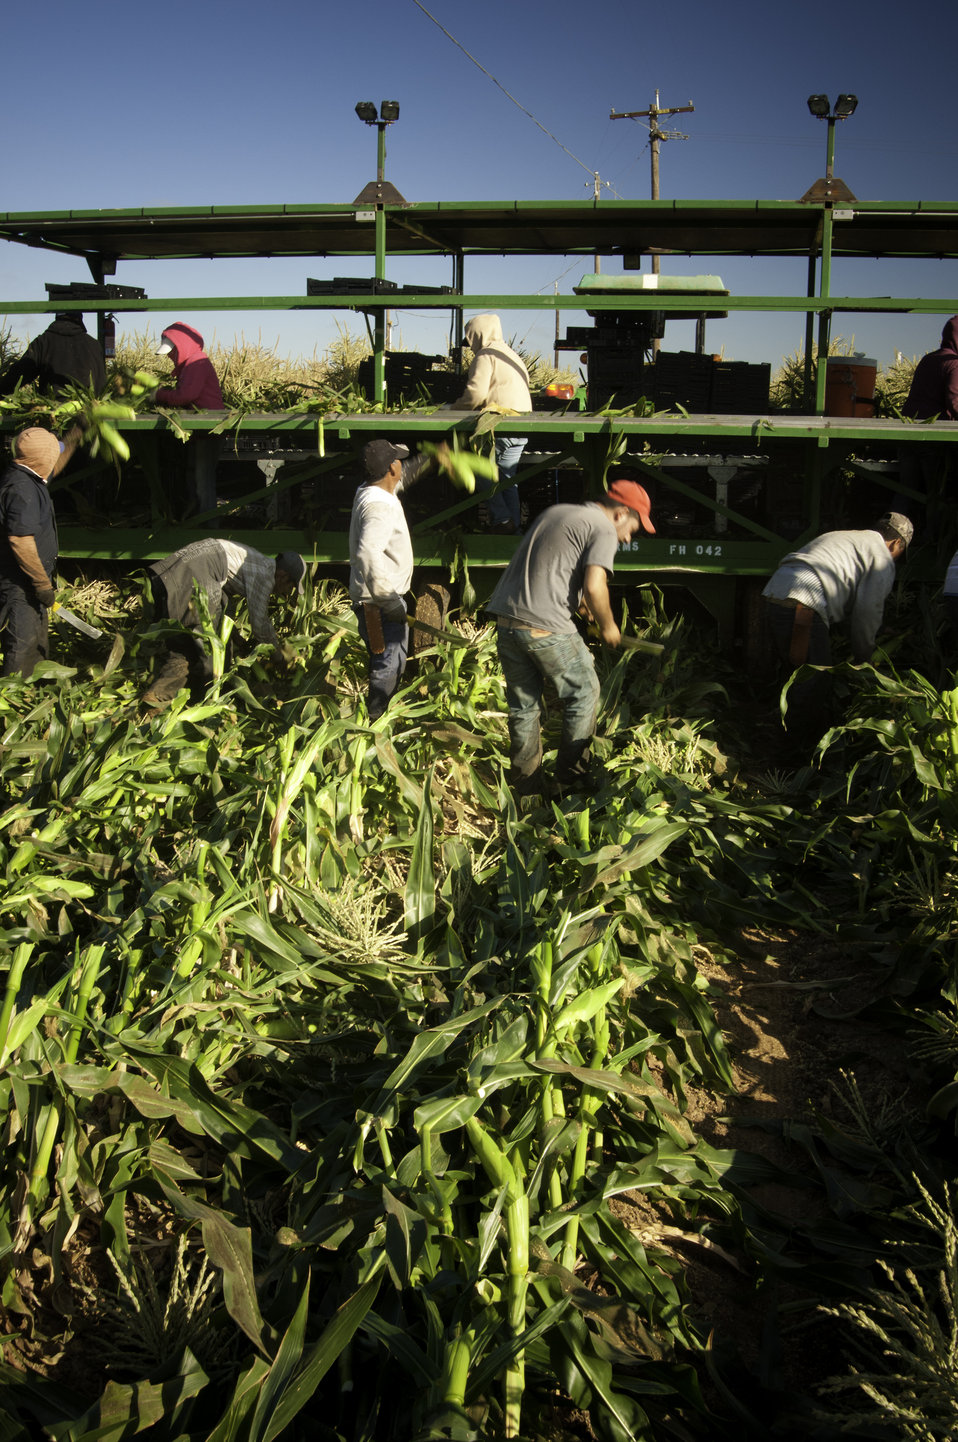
Migrant workers harvest corn on Uesugi Farms in Gilroy, CA on Wednesday, Aug. 28, 2013.